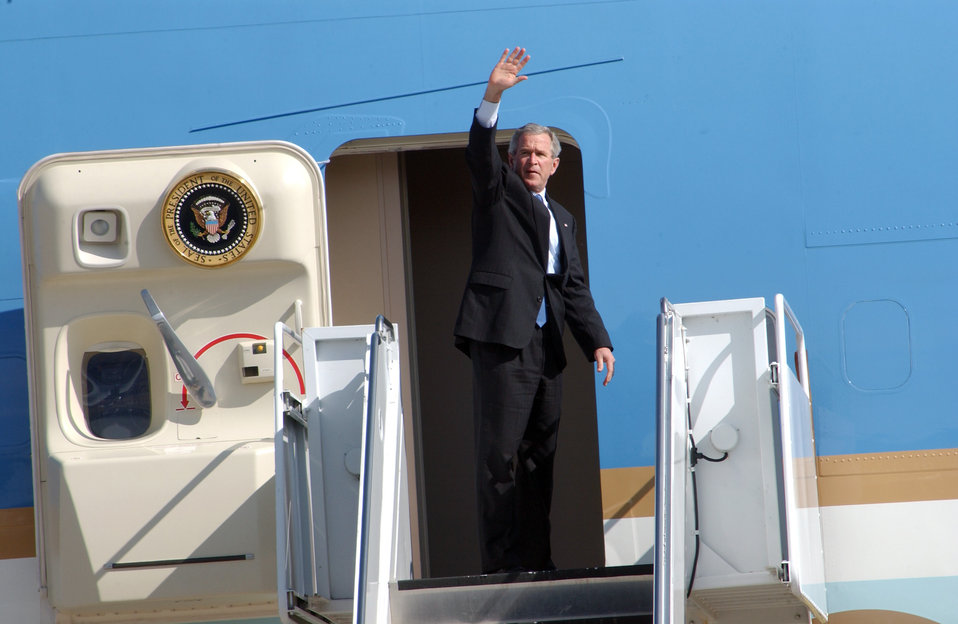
Presidential visit

RANDOLPH AIR FORCE BASE, Texas (AFPN) -- President George Bush waves good-bye as he departs this training base Jan. 1. The president was in San Antonio to visit with injured servicemembers at Brooke Army Medical Center. He also presented some of the troops Purple Heart Medals.